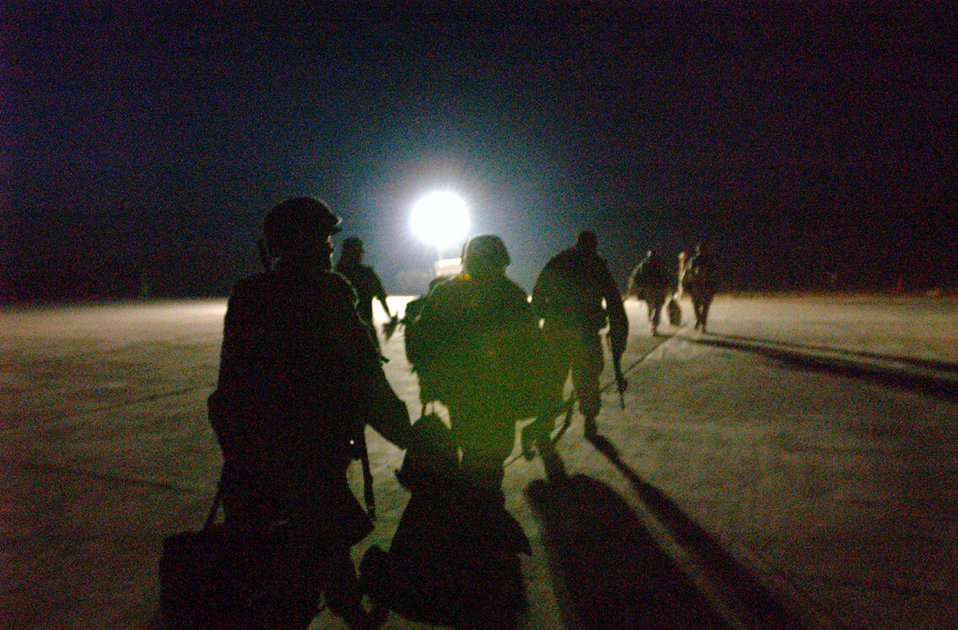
On to Tallil

OPERATION IRAQI FREEDOM -- Members of 5th Combat Communications Group from Robbins Air Force Base, Ga., depart an Air Force aircraft on the flightline of Tallil Air Base Iraq supporting Operation Iraqi Freedom.